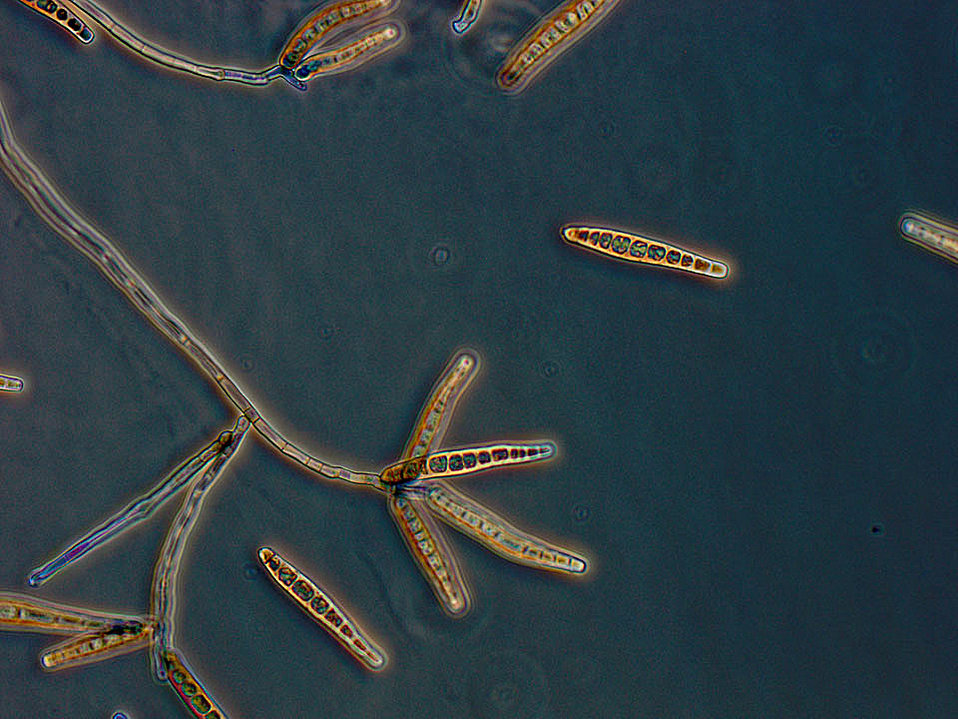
This photomicrograph reveals some of the ultrastructural morphology exhibited by the fungal organism, Exserohilum rostratum. In this particular view you'll note the ellipsoid-shaped conidia were sprouting from atop filamentous hyphae. The conidial cells are contained within sacs instead of being sequestered in septate confined spaces, which is known as being distoseptate, and the proximal end of each conidia, i.e., the end that is attached to the conidiophore, gives rise to a protuberant and truncated hilum. For a another, wider view of these structures see PHIL 15144.